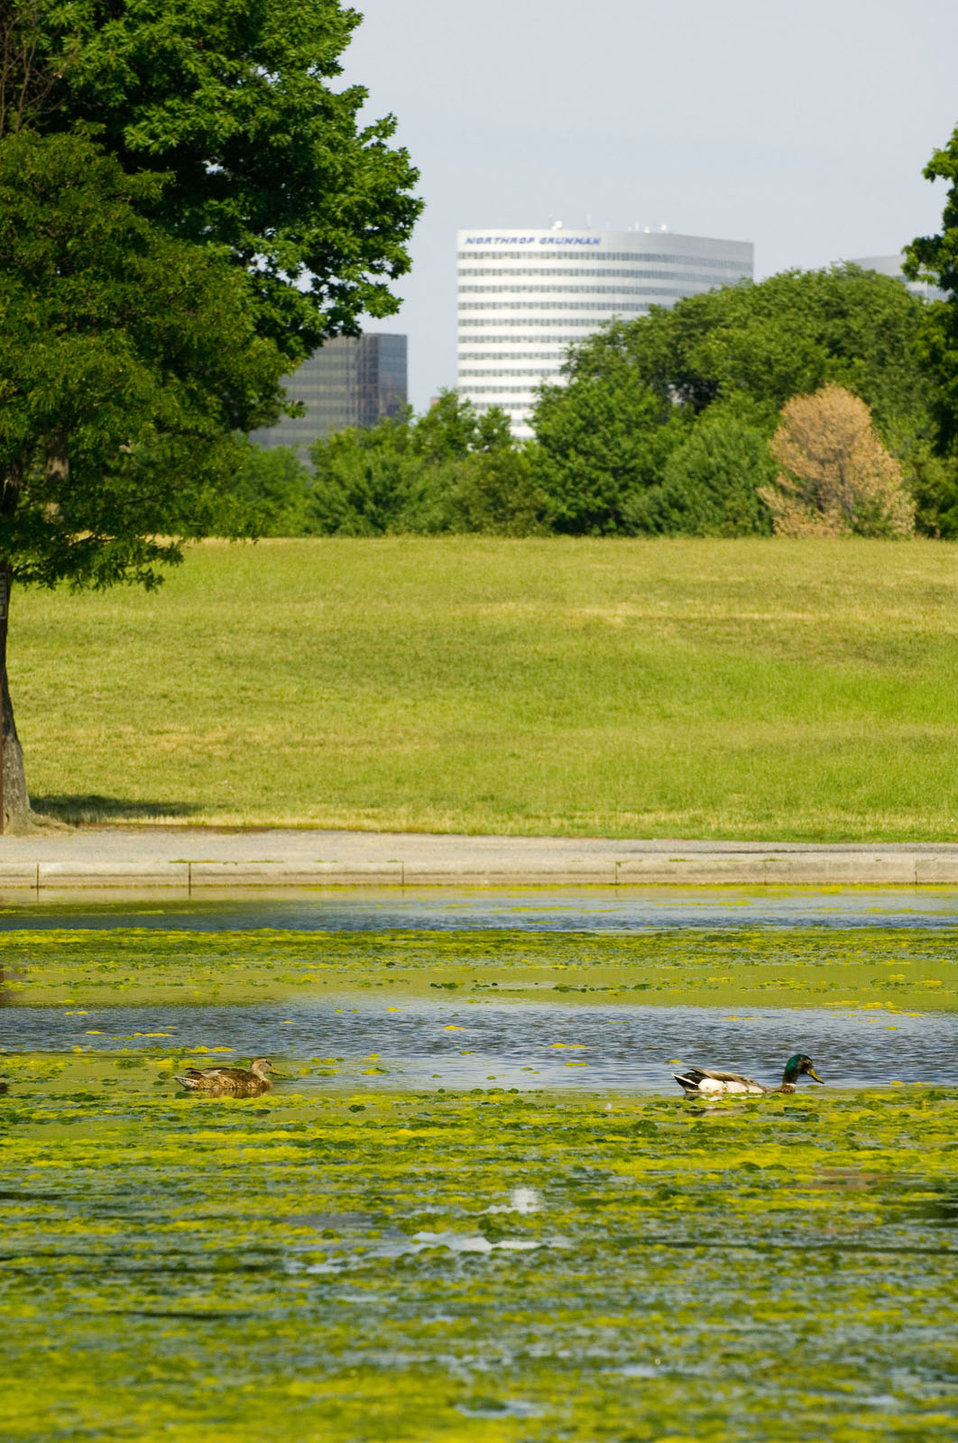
July 12, 2013 - DC Algal Bloom

More than 100,000 miles of rivers and streams, close to 2.5 million acres of lakes, reservoirs and ponds, and more than 800 square miles of bays and estuaries in the United States have poor water quality because of nitrogen and phosphorus pollution.